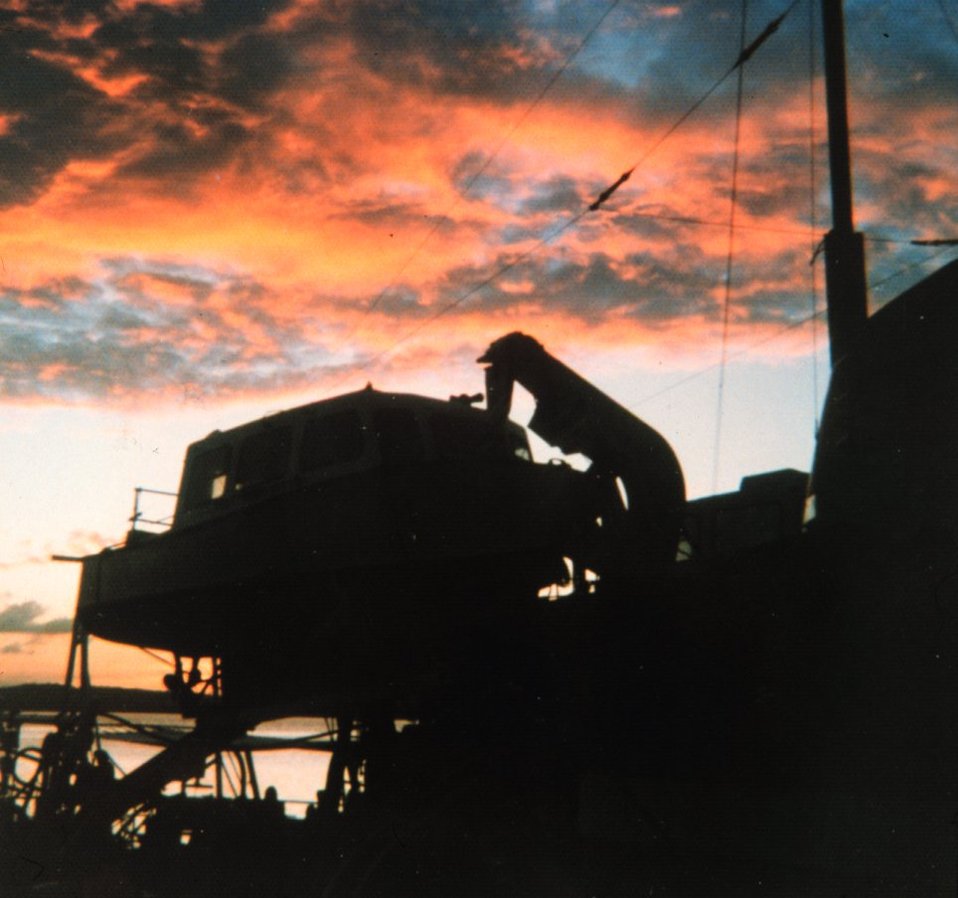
A plastic pig in the davits almost looks beautiful in a tropical sunset.